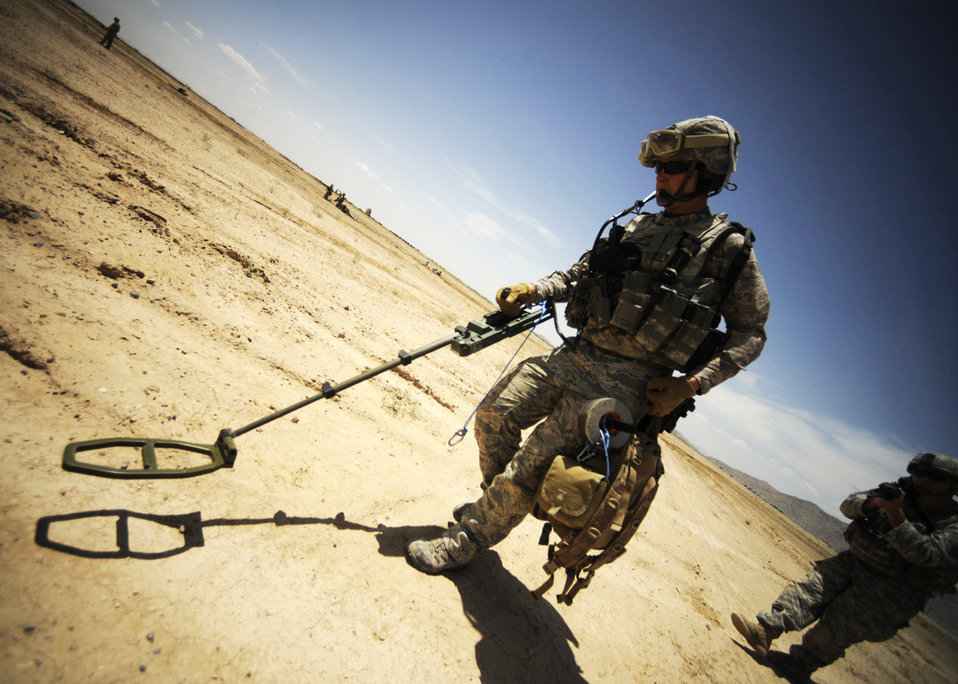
Kandahar Airmen protect servicemembers from IEDs

Staff Sgt. Ryan McCleary uses a metal detector to scan for improvised explosives during joint explosive ordnance training May 5 at Kandahar Airfield, Afghanistan. Sergeant McCleary is a 755th Explosive Ordnance Disposal technician.